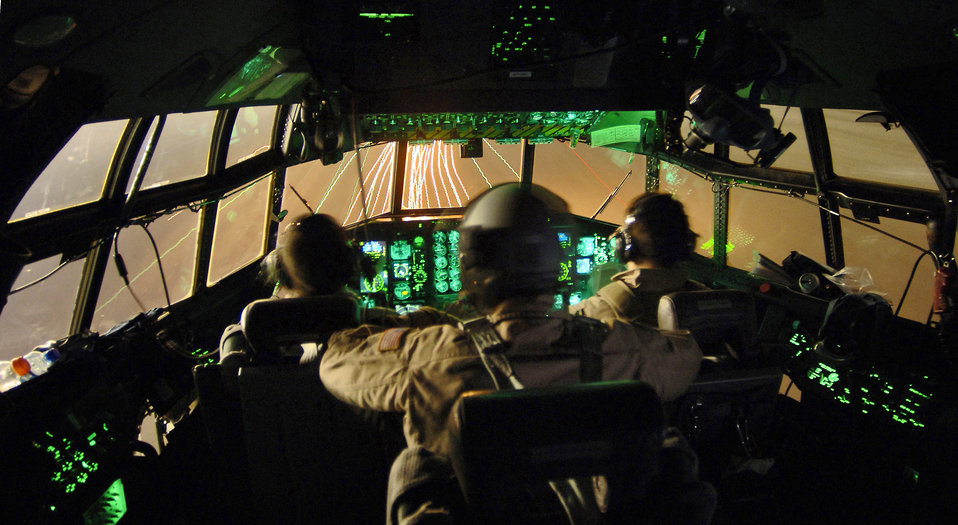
Combat support

SOUTHWEST ASIA -- Maj. John Eric Hall, Tech. Sgt. Craig Schueller and Capt. Tim Pemberton approach a runway in a C-130 Hercules after a combat support mission. The Reservists are with the 746th Expeditionary Airlift Squadron.